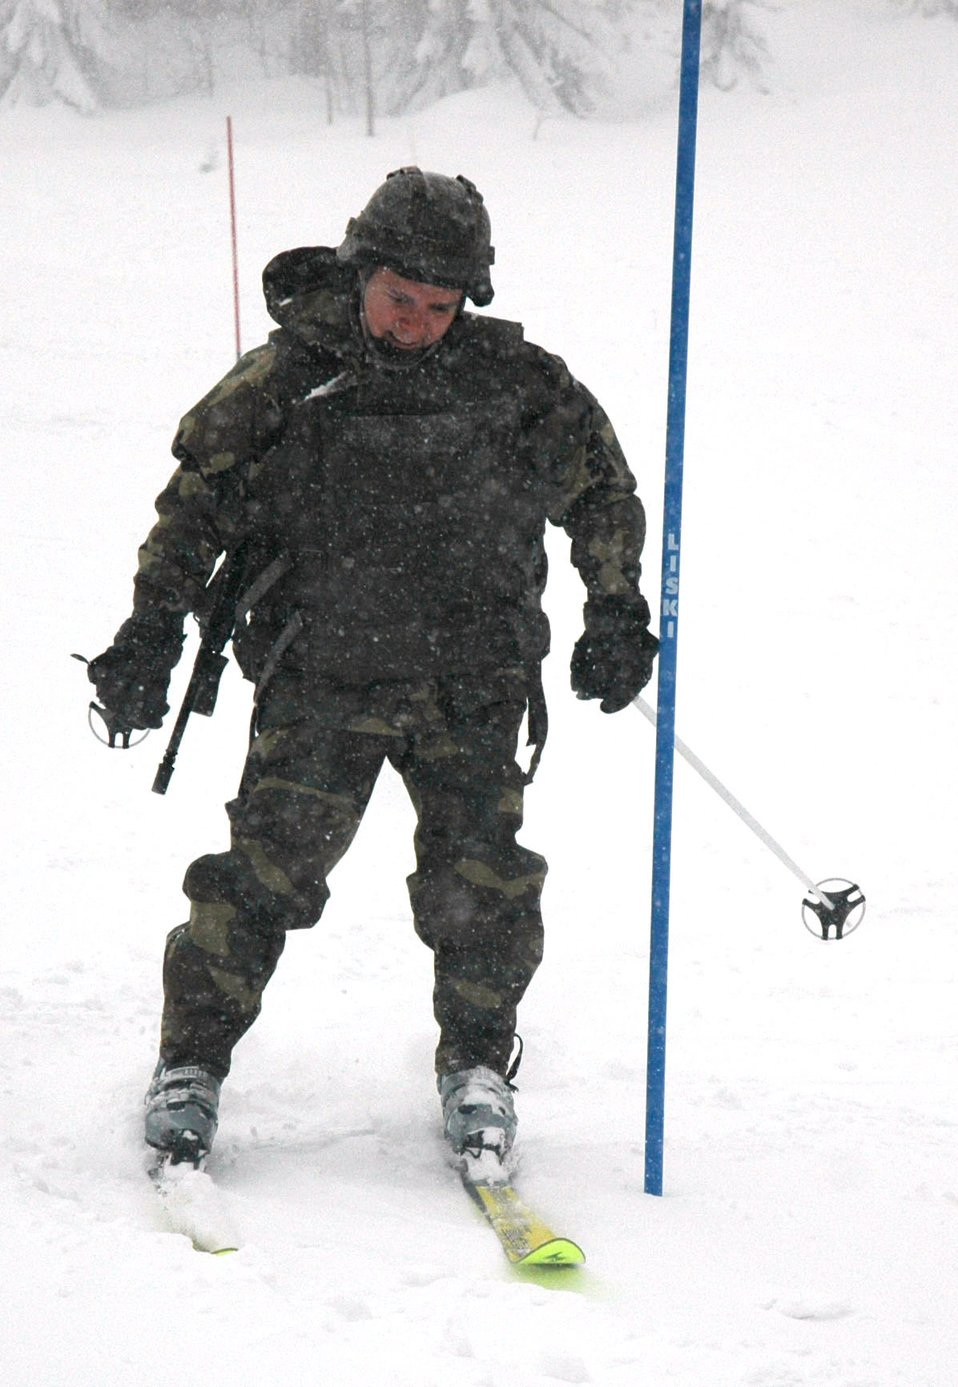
Let the games begin

TUZLA AIR BASE, Bosnia and Herzegovina (AFPN) -- Capt. Mark Arzate skirts his way down the slopes during his slalom ride during Operation Winter Games. Captain Arzate is chief of airfield operations for Detachment 1, 401st Air Expeditionary Wing.